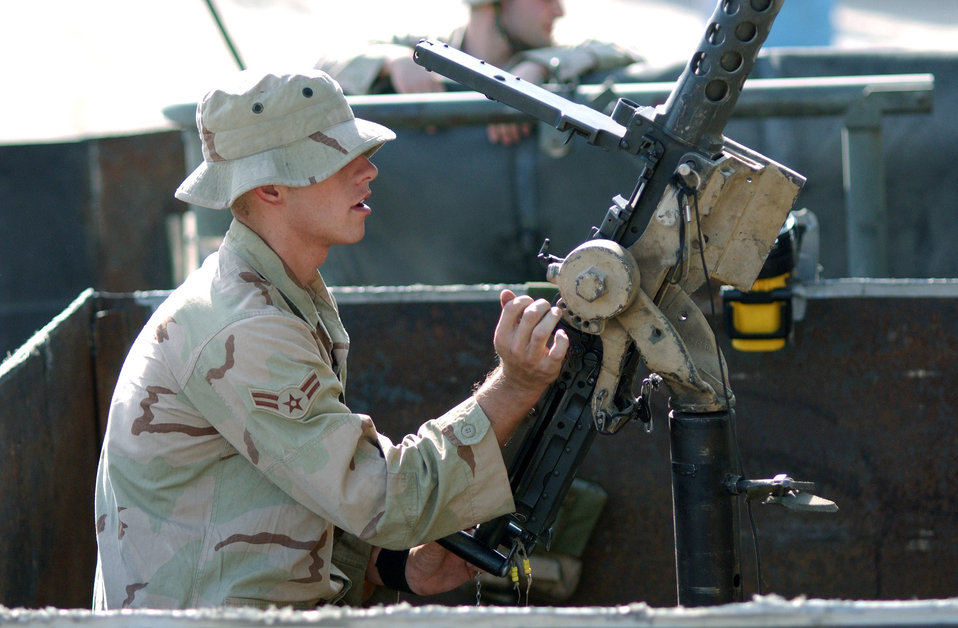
Despite danger, convoy Airmen keep on trucking

MOSUL, Iraq -- Airman 1st Class Michael Ross readies his .50-caliber machine gun before a convoy escort mission Sept. 22. Airman Ross is a vehicle operator for Detachment 1 of the 732nd Expeditionary Logistics Readiness Squadron here. He is deployed from Cannon Air Force Base, N.M.